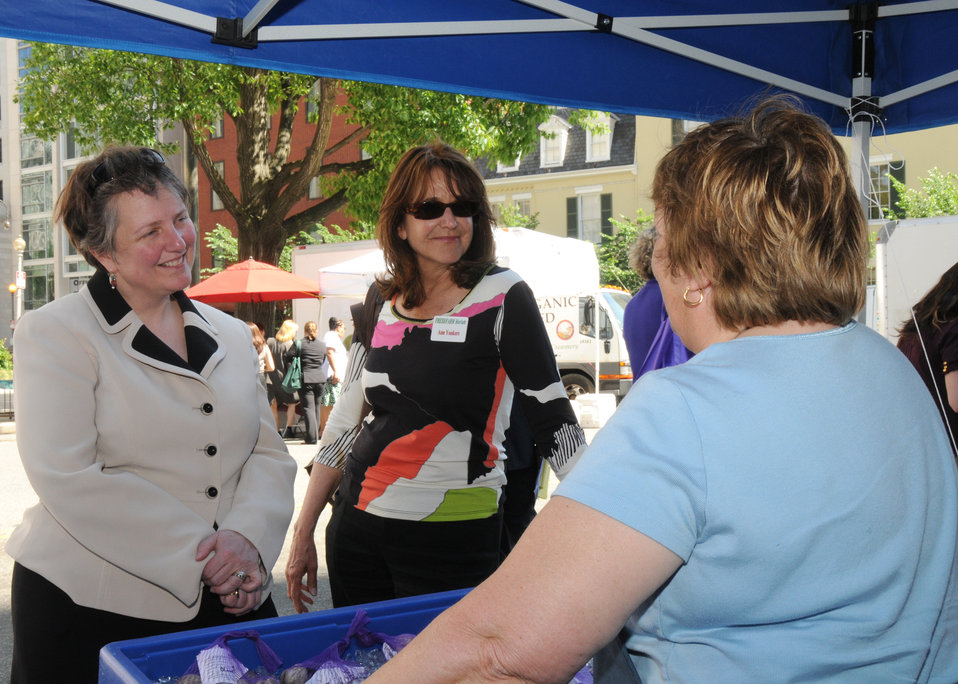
Agriculture Deputy Secretary Kathleen Merrigan wishes a vendor at the Freshfarm Market on Vermont Avenue in Washington, D. C., by the White House good luck on her sales on Thursday, May 6, 2010. This is the vendor's first time at this market, she is selling fresh clams and other fresh fish. USDA photo 10di1348-156.